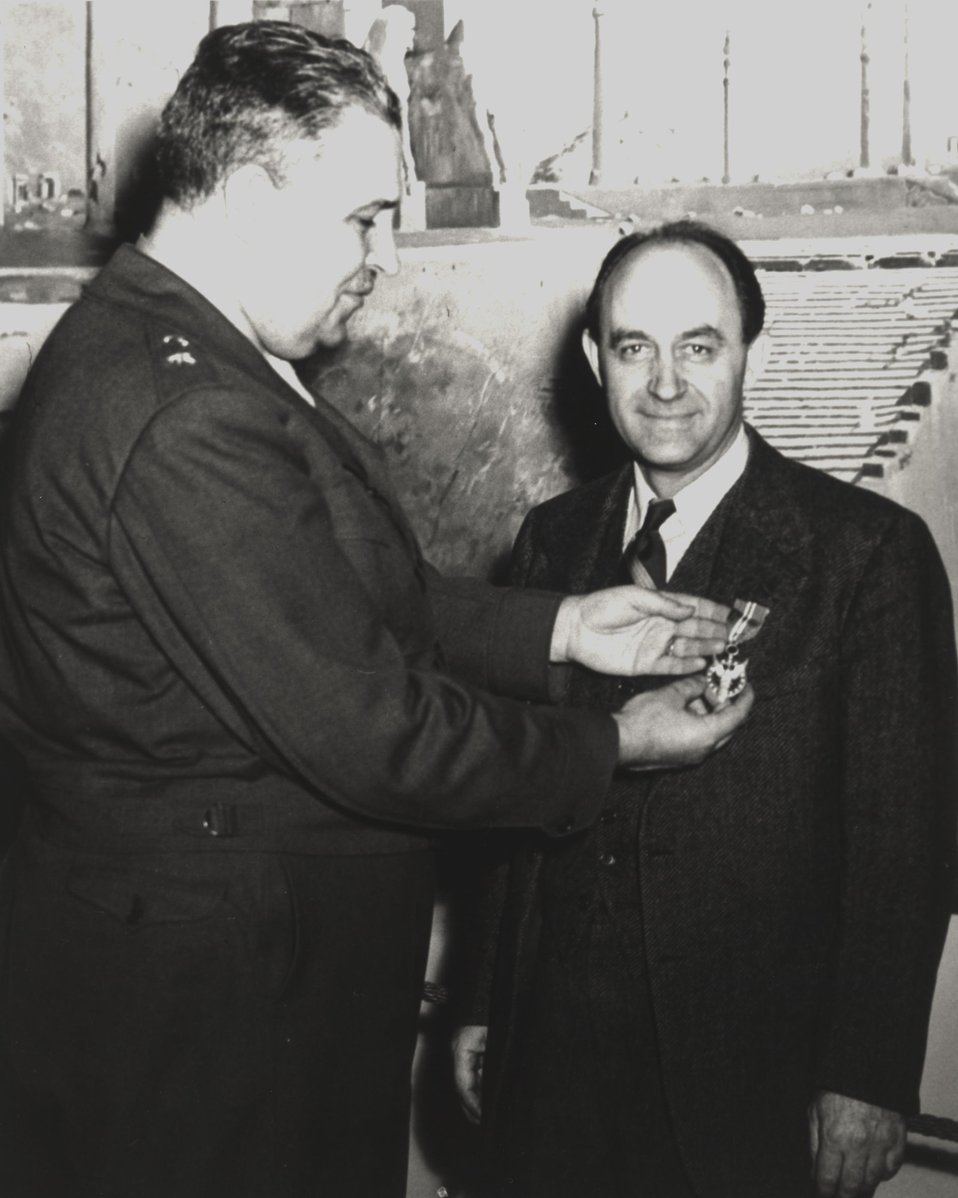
March 20, 1946, Dr Enrico Fermi receives the Medal of Merit for his wartime service to the US, presented by General Leslie R. Groves.